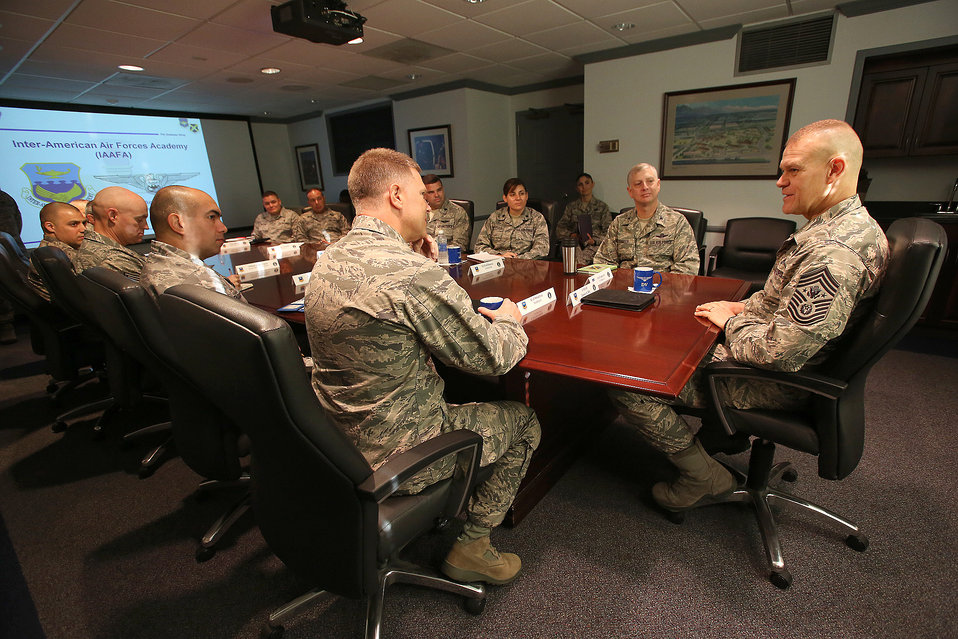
Inter-American Air Forces Academy

Colonel Marc F. Stratton IAAFA commandant (left) hosts a visit by Chief Master Sgt. of the Air Force James Roy to the Inter-American Air Forces Academy in Joint Base San Antonio-Lackland, TX, Oct. 30, 2012. Also present was 37th Training Wing Commander Colonel Mark D. Camerer (right).